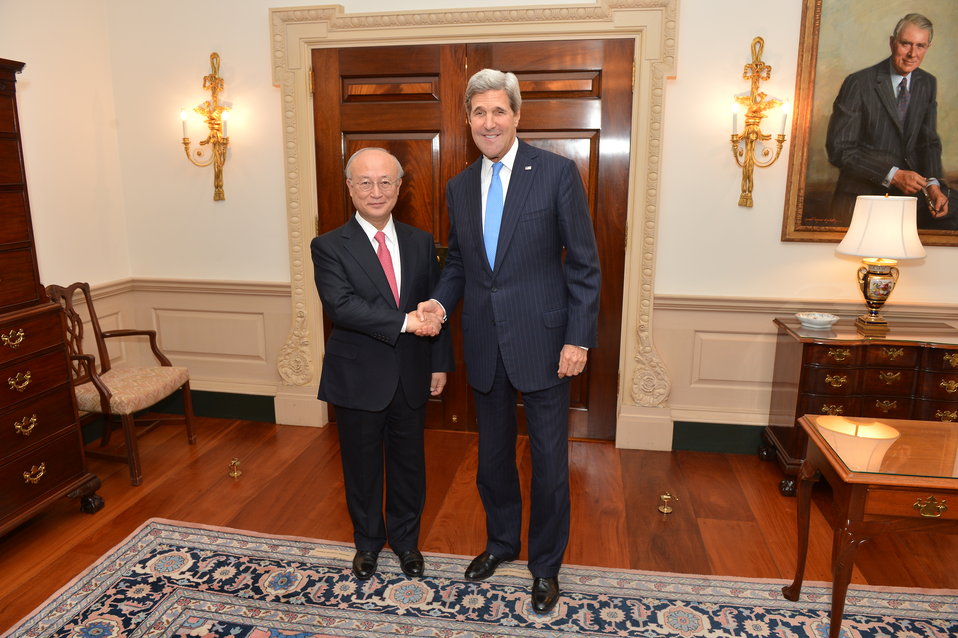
Secretary Kerry Shakes Hands With IAEA Director General Amano

U.S. Secretary of State John Kerry shakes hands with Director General of the International Atomic Energy Agency Yukiya Amano before their bilateral meeting at the U.S. Department of State in Washington, D.C., on October 31, 2013.